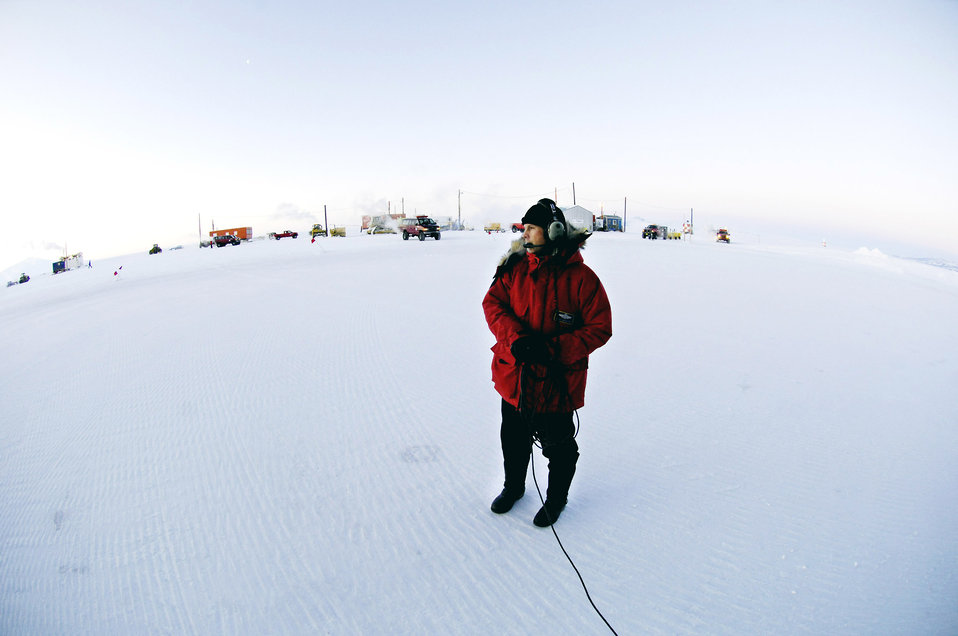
Operation Deep Freeze 2007-08 begins

Senior Master Sgt. Jim Masura conducts pre-flight checks on his C-17 Globemaster III during Operation Deep Freeze Aug. 20 at Pegasus Runway in Antarctica. A C-17 and 31 Airmen from McChord Air Force Base, Wash., began the annual winter fly-in augmentation of scientists, support personnel, food and equipment for the U.S. Antarctic Program at McMurdo Station. WinFly is the opening of the first flights to McMurdo Station, which closed for the austral winter in February.